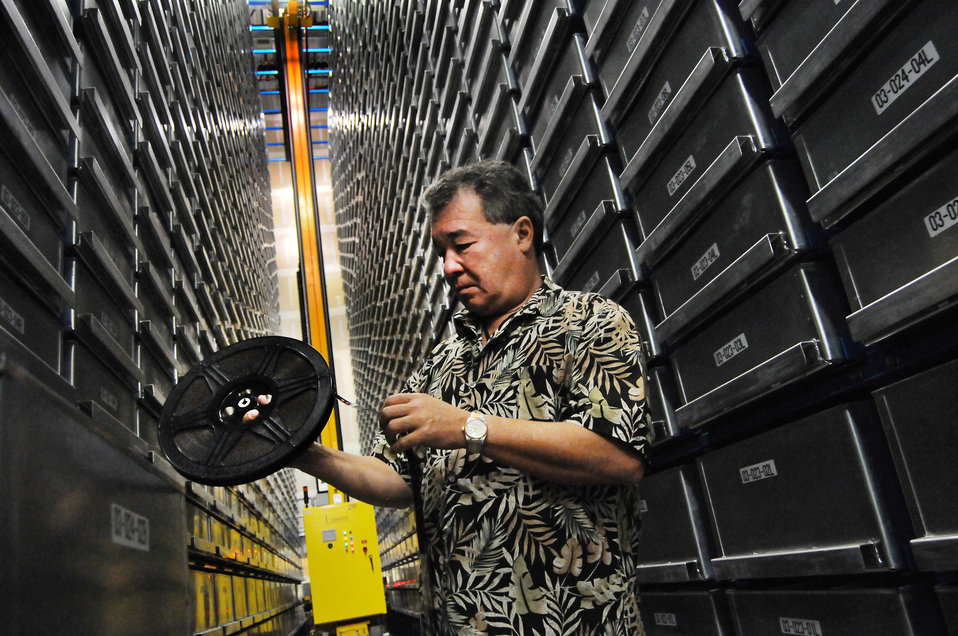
Archives

Dr. Pedro Loureiro checks a film reel at the automated search and retrieval system at the Defense Imagery Management Operations Center-Riverside, Calif., Oct. 9, 2012. Loureiro, the archivist at DIMOC-R, helped find a film reel containing clips of the Tonight Show starring Johnny Carson. The ASRS has about 280,000 analog tapes, 80,000 rells of 16mm and 35mm film and 40,000 negatives, slides and photos in storage.